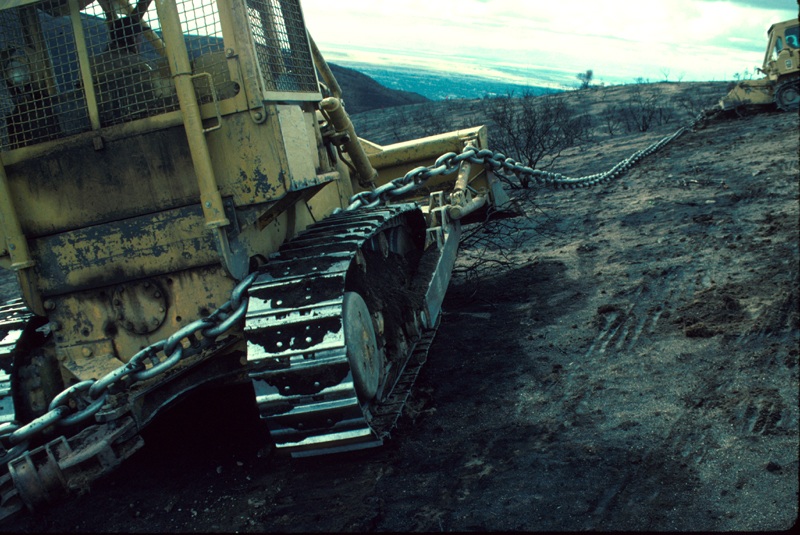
8th Street Fire Range Restoration Project Lower Snake River District